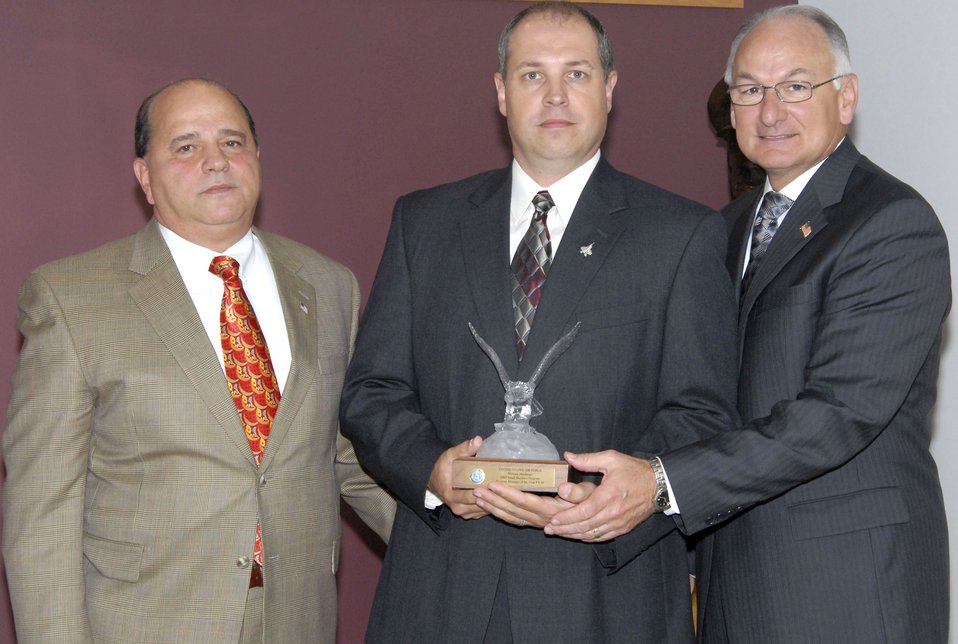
DoD honors Air Force civilian with small business award

Mr. Anthony Martoccia, director for the Office of Small Business Programs and Dr. James Finley, the deputy under Secretary of Defense for Acquisition and Technology pose with Small Business Program Manager of the Year Winner, Mr. William G. Machingo Aug. 22 in Washington, D.C.